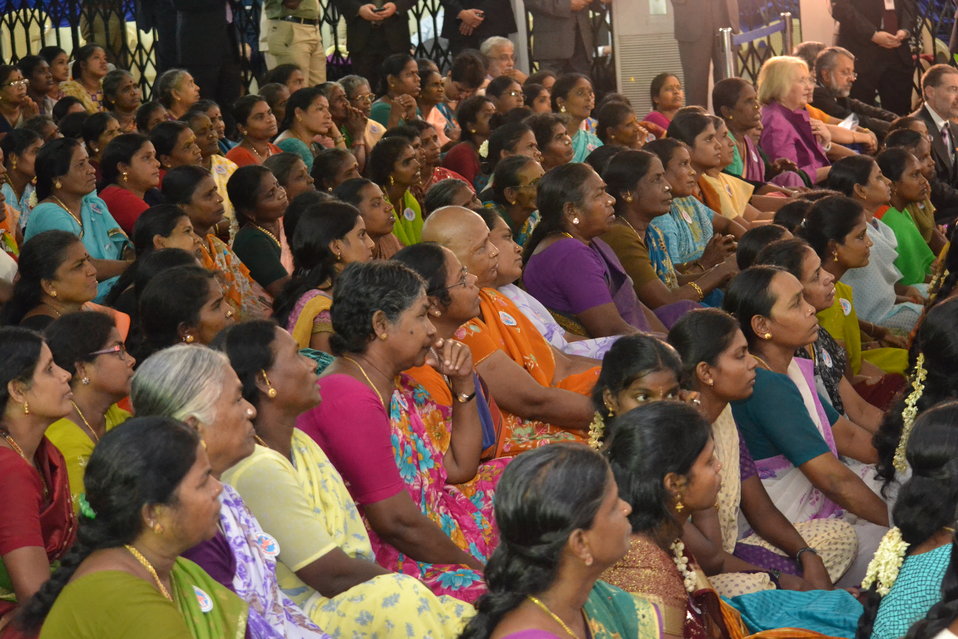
South Indian Women Listen to Secretary Clinton

A large crowd of South Indian women, including U.S. Ambassador-at-Large for Women’s Issues Melanie Verveer, listen to U.S. Secretary of State Hillary Rodham Clinton speak at the Working Women’s Forum event in Chennai, India, on July 20, 2011. [Paul Cohn/ State Department photo]